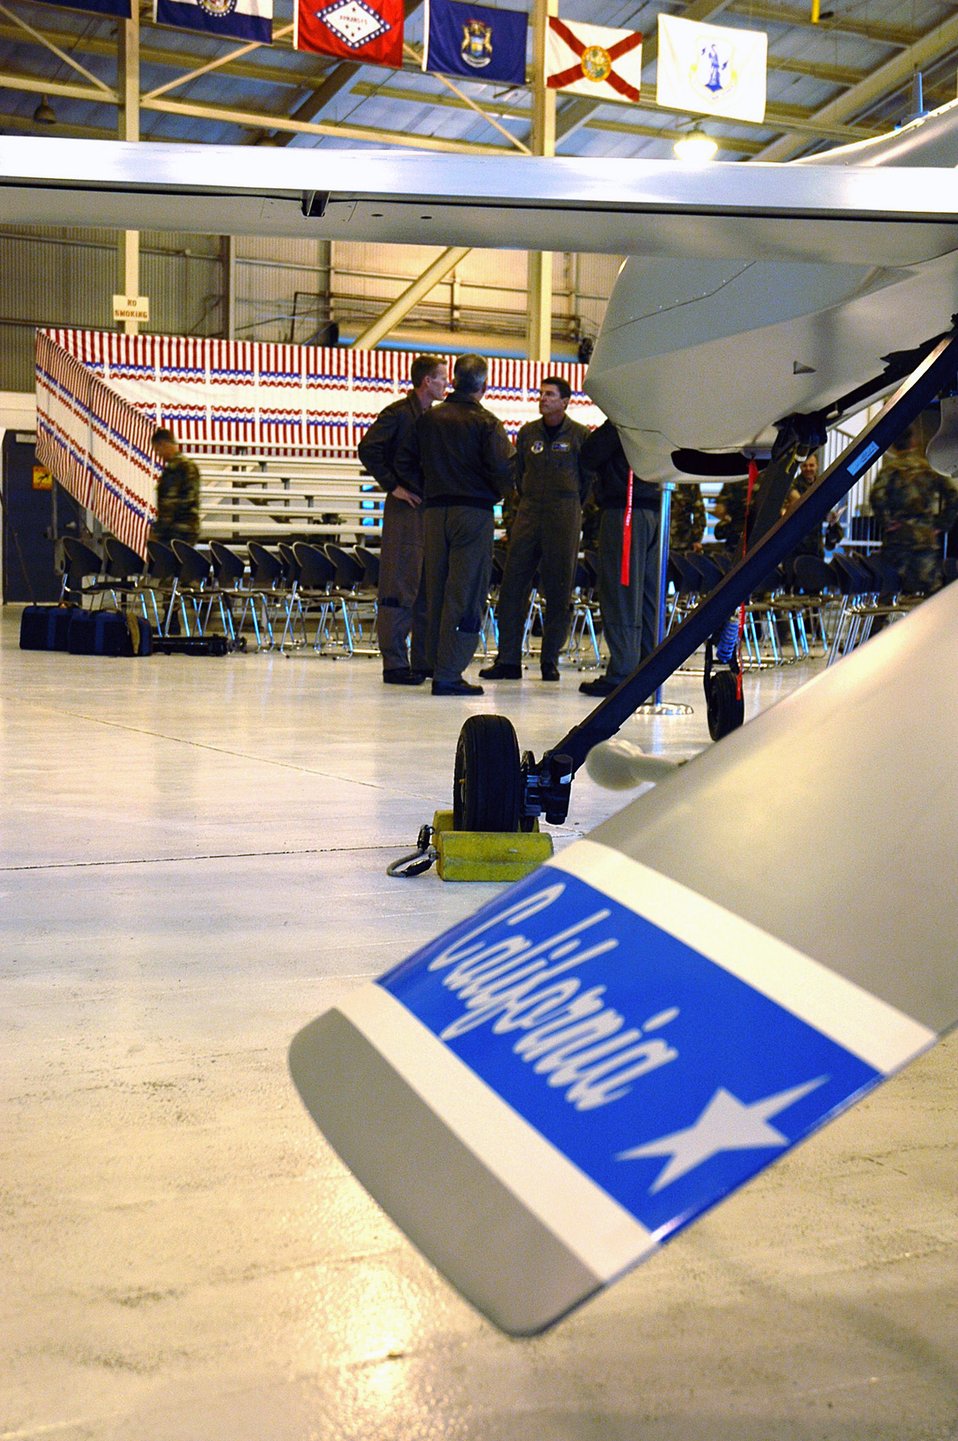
Air Guard Predator pilots increase combat air patrols

California Air National Guard MQ-1 Predator pilots meet in their hanger at March Air Reserve Base in November 2006 following the activation ceremony for the 196th Reconnaissance Squadron. Today, pilots in the squadron operate three combat air patrols in Iraq from the squadron's base operations center.